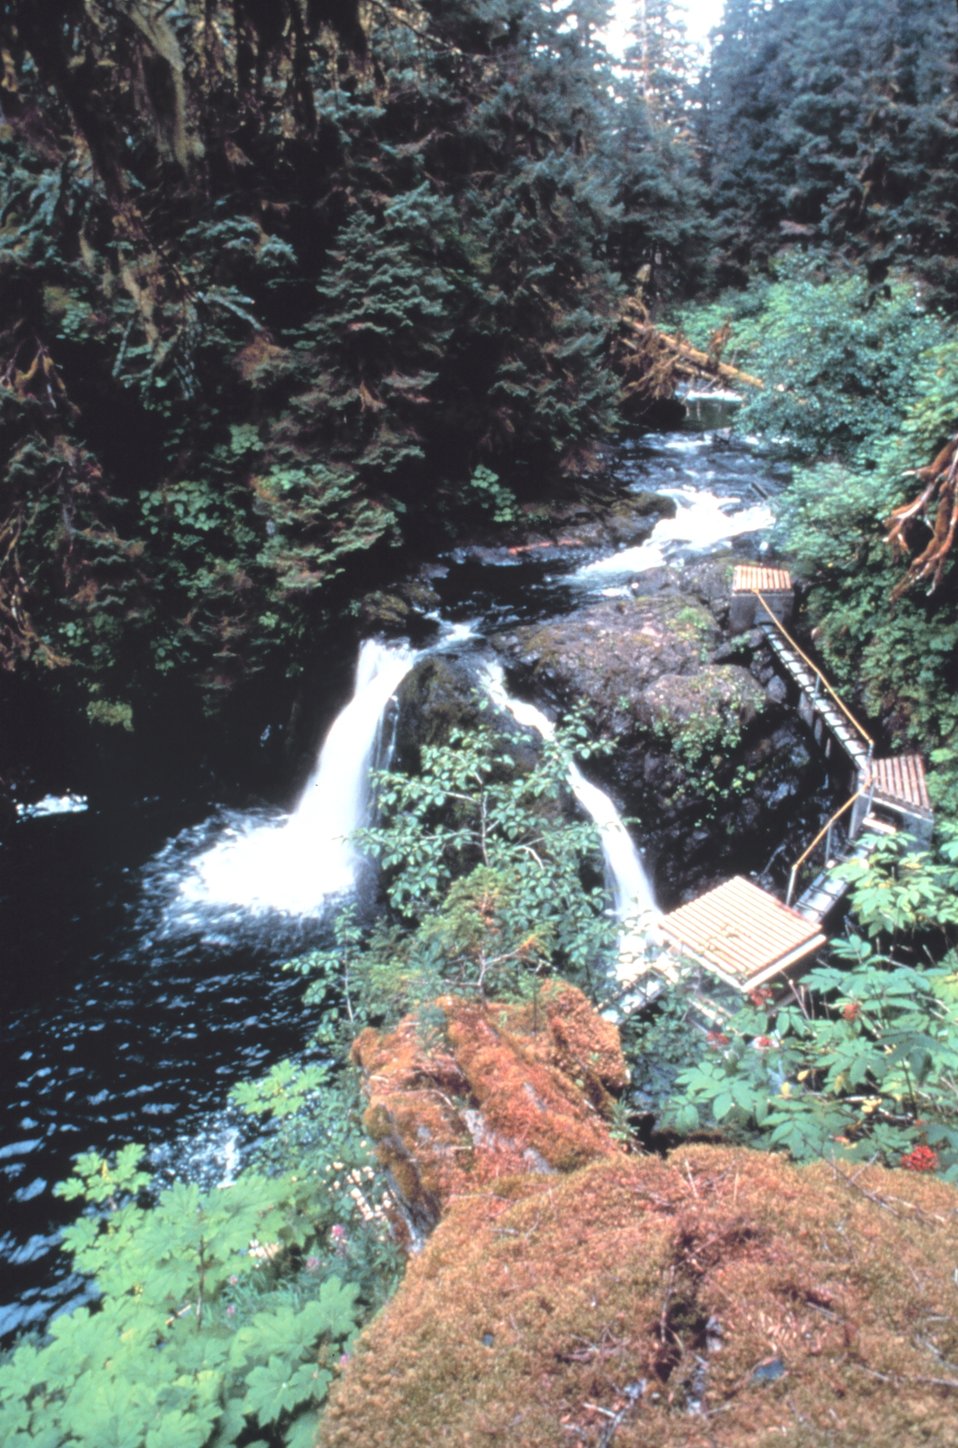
Appears to be a fish ladder bypassing a natural waterfall